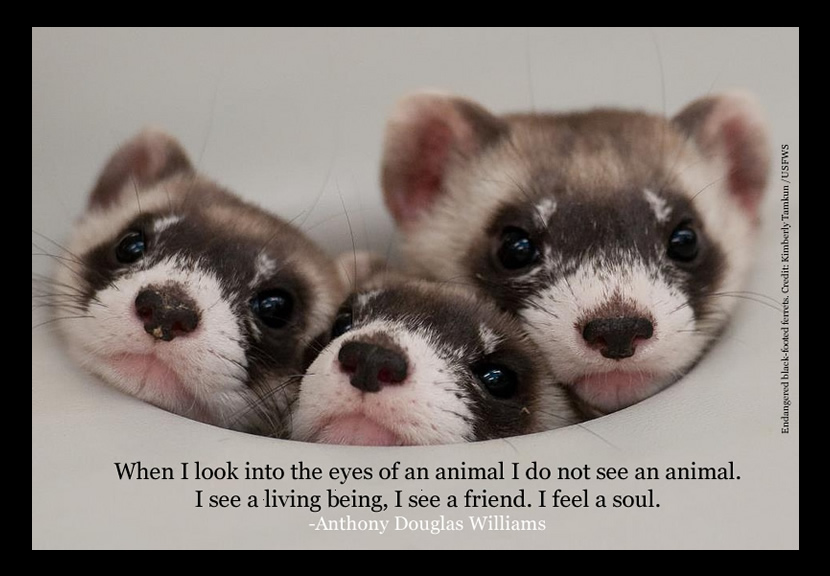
Endangered Black-footed Ferrets